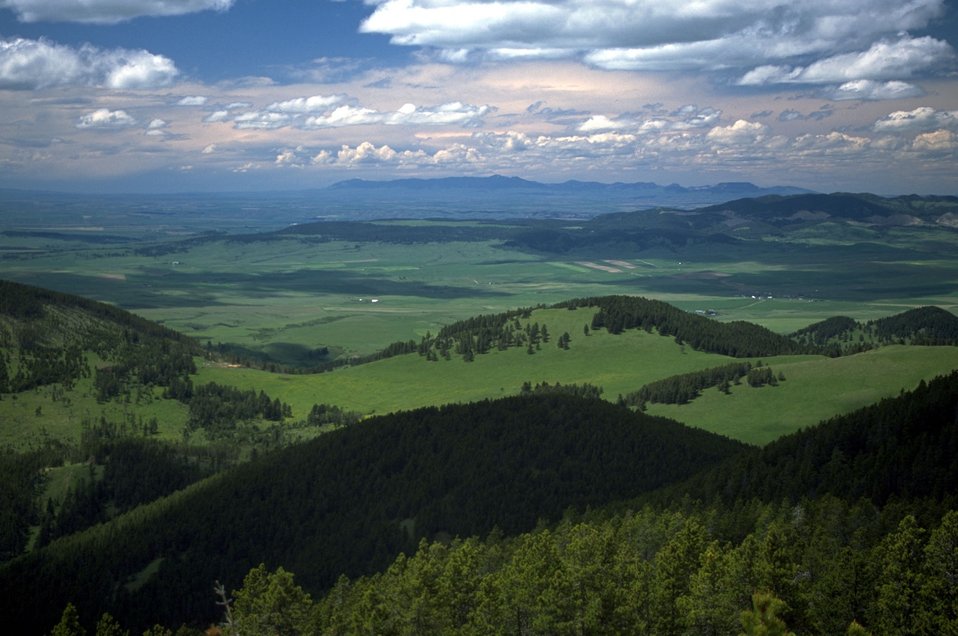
View from the Judith Mountains towards the Highwood Mountains